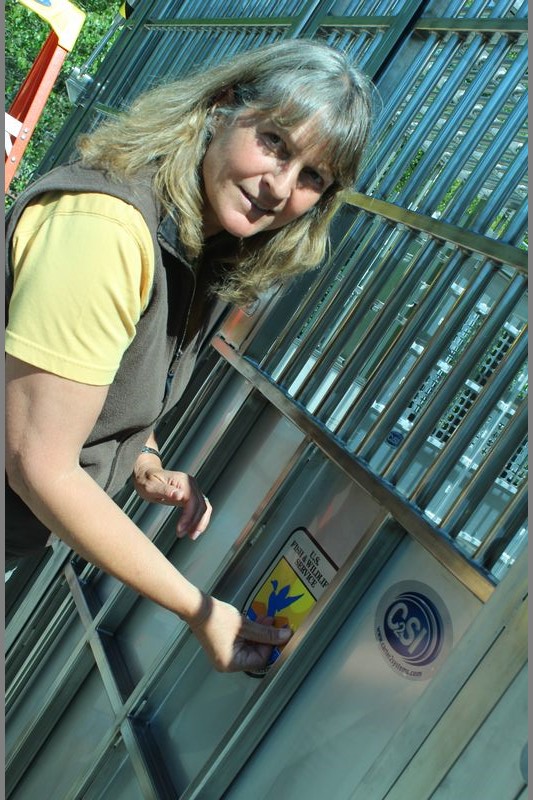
Press Conference on the polar bear holding module. USFWS/Rose Primmer